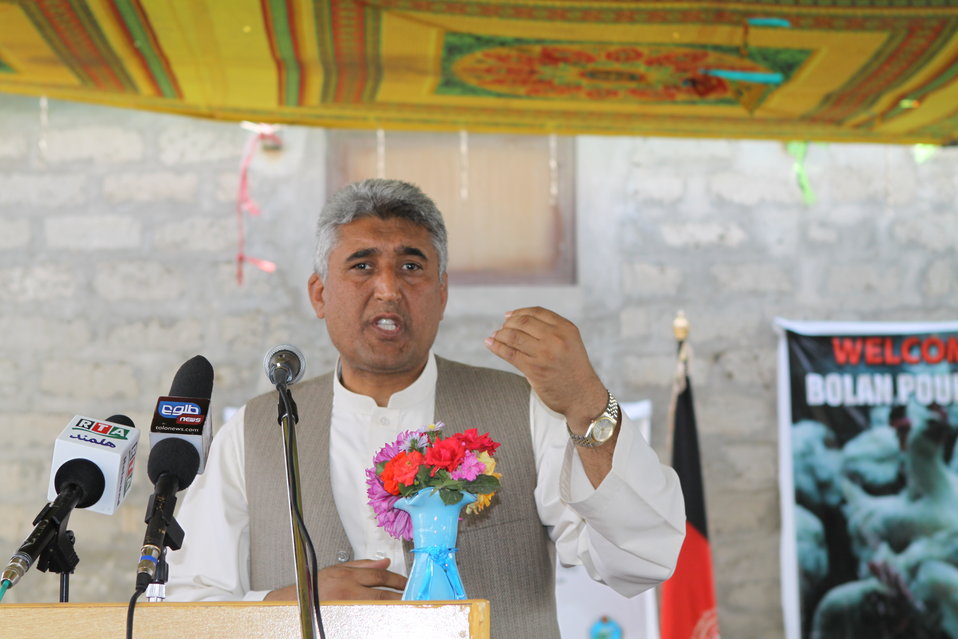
Bolan Poultry Farm